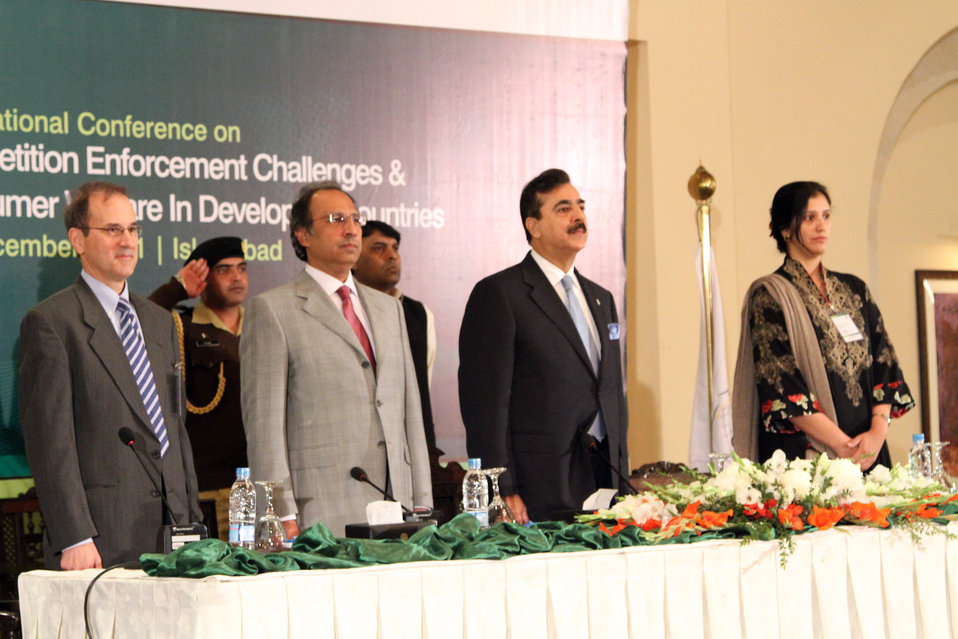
USAID Sponsors Conference on Competition Enforcement Challenges and Consumer Welfare in Developing Countries

December 2011: Richard Albright, U.S. Coordinator for Economic and Development Assistance, Mr. Hafeez Shaikh, Federal Finance Minister, Prime Minister Syed Yousaf Raza Gilani, and Ms. Rahat Kaunain Hassan, Chairperson of the Competition Commission of Pakistan participated in the USAID-funded international conference on Competition Enforcement Challenges & Consumer Welfare in Developing Countries. Sponsored by USAID's Competitiveness Support Fund, the conference aimed to highlight international best practices in the field of competition.